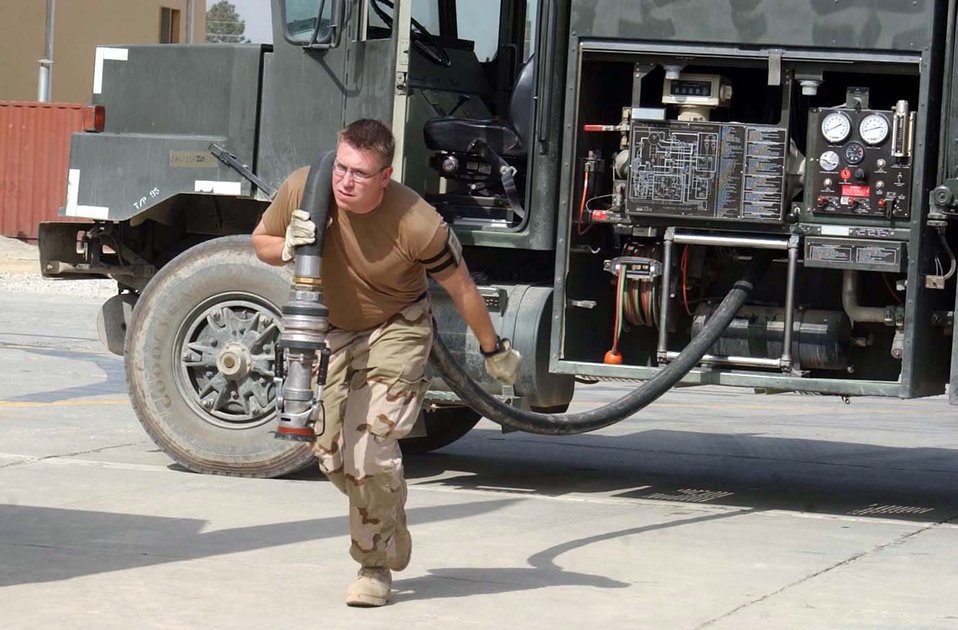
Bagram fuels

BAGRAM AIR BASE, Afghanistan -- Staff Sgt. Shannon Walline uncoils a fuel hose as he sets up for an A-10 Thunderbolt II refueling operation. Sergeant Walline is deployed from Davis-Monthan Air Force Base, Ariz.